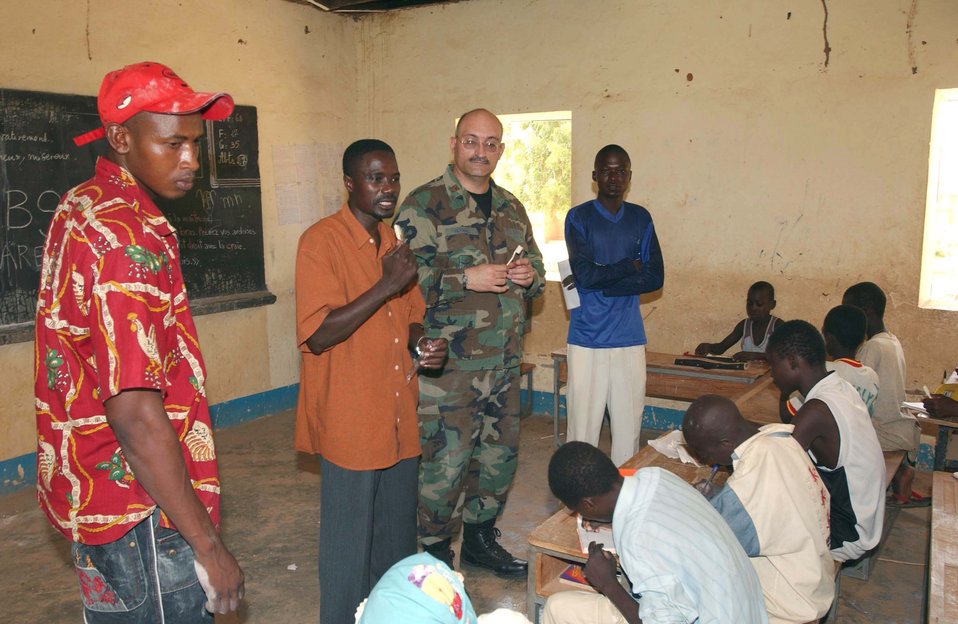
Reservists visit Nigerien school

NEAR CAMP TONDIBIAH, Niger -- Maj. (Dr.) Joe Alvarez and translator Hamadou Soumana demonstrate the proper use of a toothbrush at a local school. Dr. Alvarez was part of an Air Force Reserve humanitarian mission in Niger. He is a dentist with the 445th Aeromedical Staging Squadron at Wright Patterson Air Force Base, Ohio.